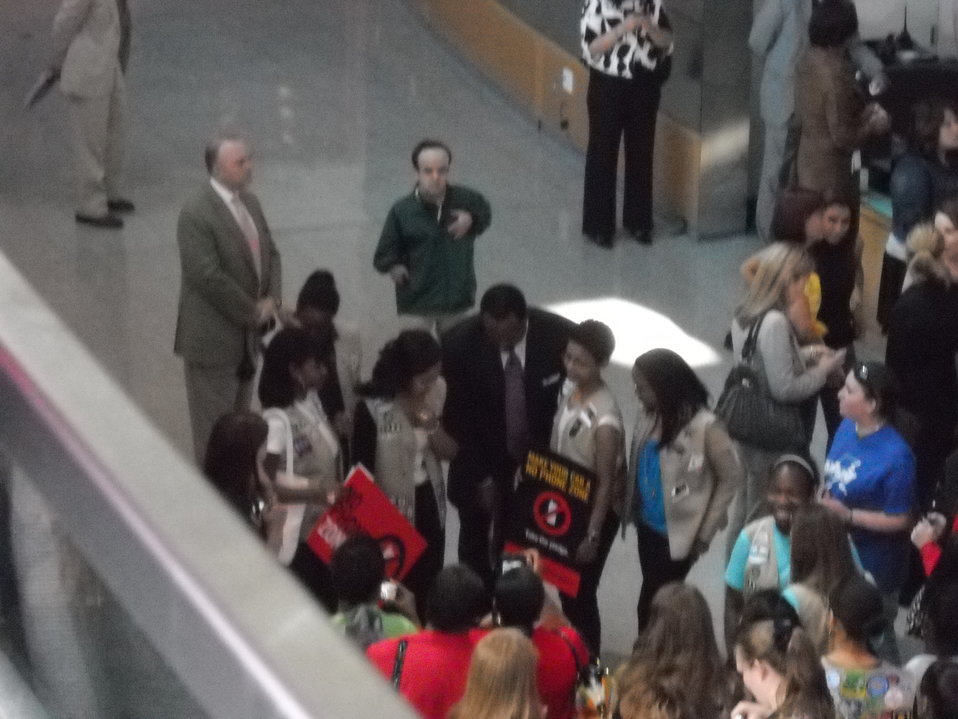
National No Phone Zone Day Newsum Washington, DC April 30, 2010 020